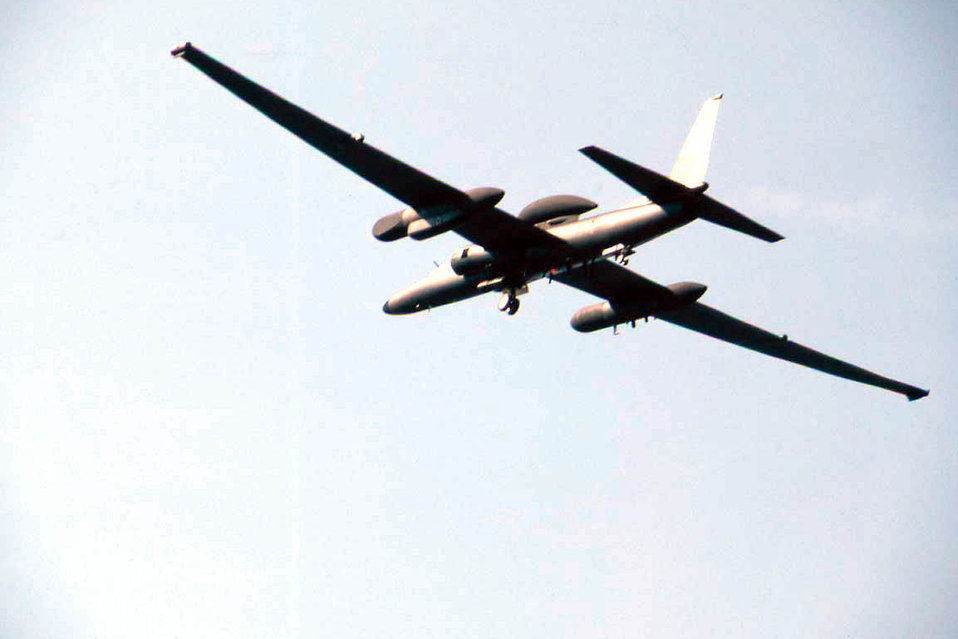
Dragon Lady in flight

FILE PHOTO -- The U-2 is a single-seat, single-engine, high-altitude, reconnaissance aircraft. Long, wide, straight wings give the U-2 glider-like characteristics. It can carry a variety of sensors and cameras, is an extremely reliable reconnaissance aircraft, and enjoys a high mission completion rate. Because of its high altitude mission, the pilot must wear a full pressure suit. The U-2 is capable of collecting multi-sensor photo, electro-optic, infrared and radar imagery, as well as performing other types of reconnaissance functions. However, the aircraft can be a difficult aircraft to fly due to its unusual landing characteristics. The aircraft is being upgraded with a lighter engine that burns less fuel, cuts weight and increases power. The entire fleet should be reengined by 1998. Other upgrades are to the sensors and adding the Global Positioning System that will superimpose geo-coordinates directly on collected images.